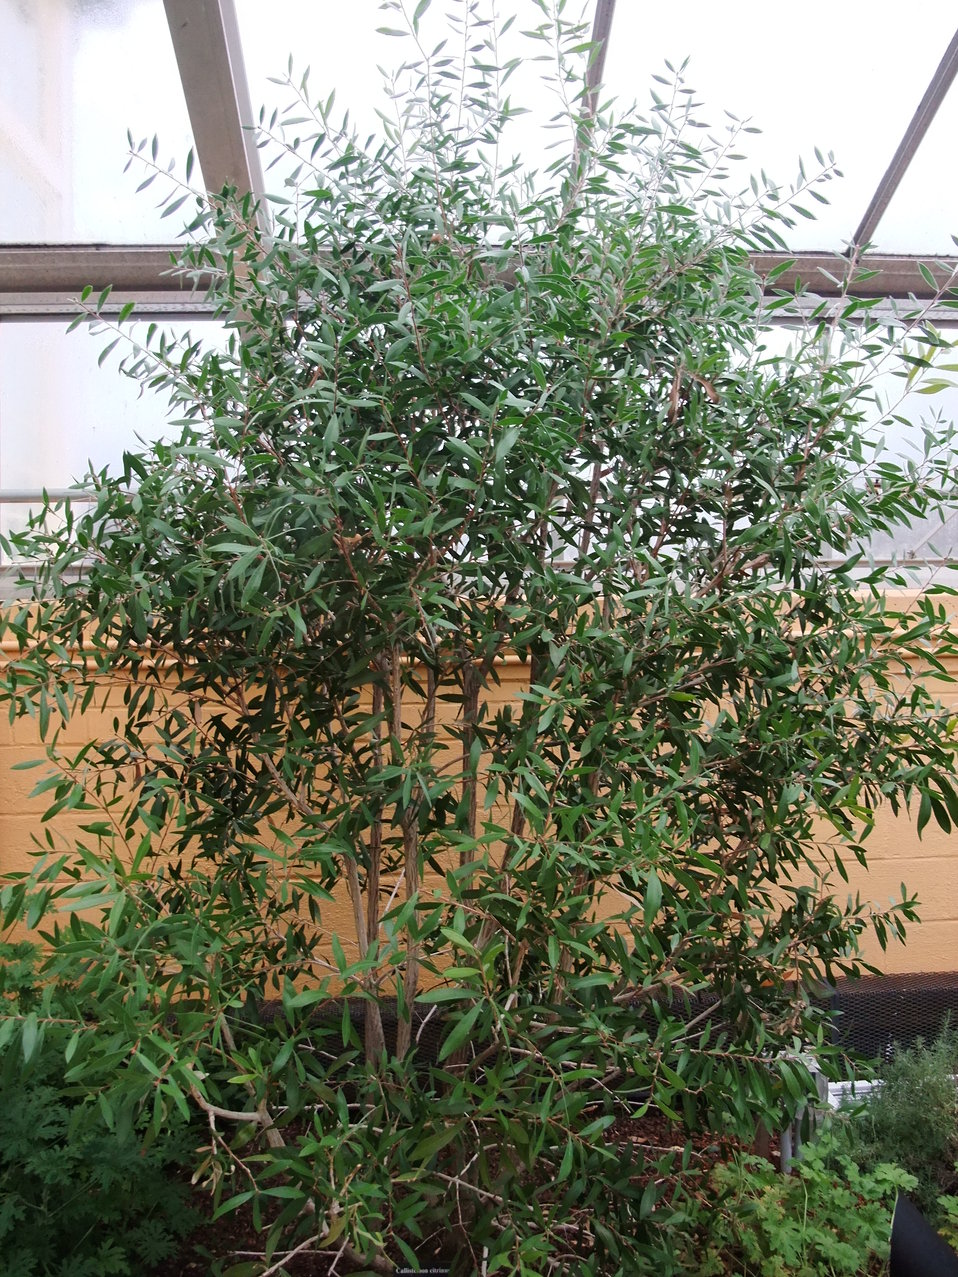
A photograph of Callistemon citrinus.